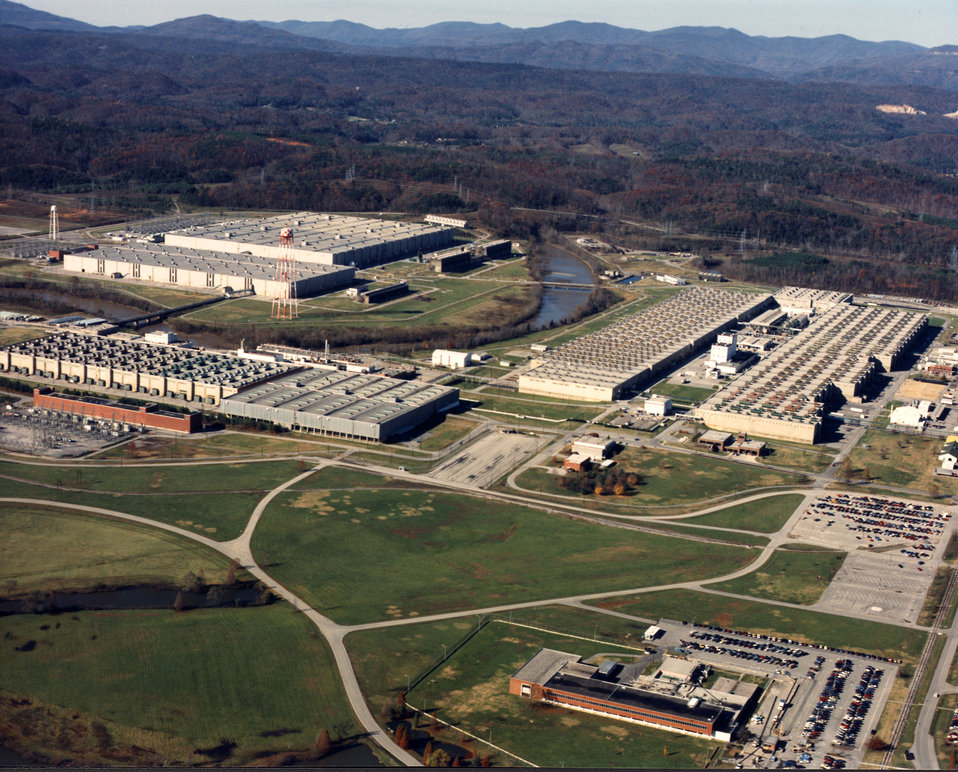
K-25 aerial Oak Ridge

89-1096 DOE photo by Frank Hoffman 11-9-1989 Oak Ridge Tennessee